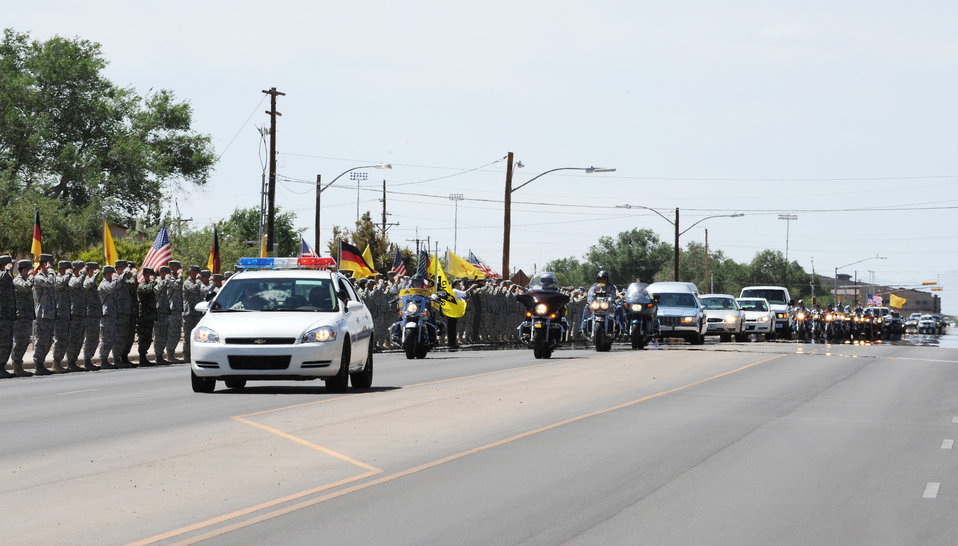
Holloman Airmen honor fallen Soldier

Holloman Air Force Base members render a final salute to Army Spc. Christopher Kurth June 11 at Holloman Air Force Base, N.M., The Soldier was killed in a grenade attack June 4 near Kirkuk, Iraq. Specialist Kurth was a native of Alamogordo, N.M., and was stationed at Fort Hood, Texas.